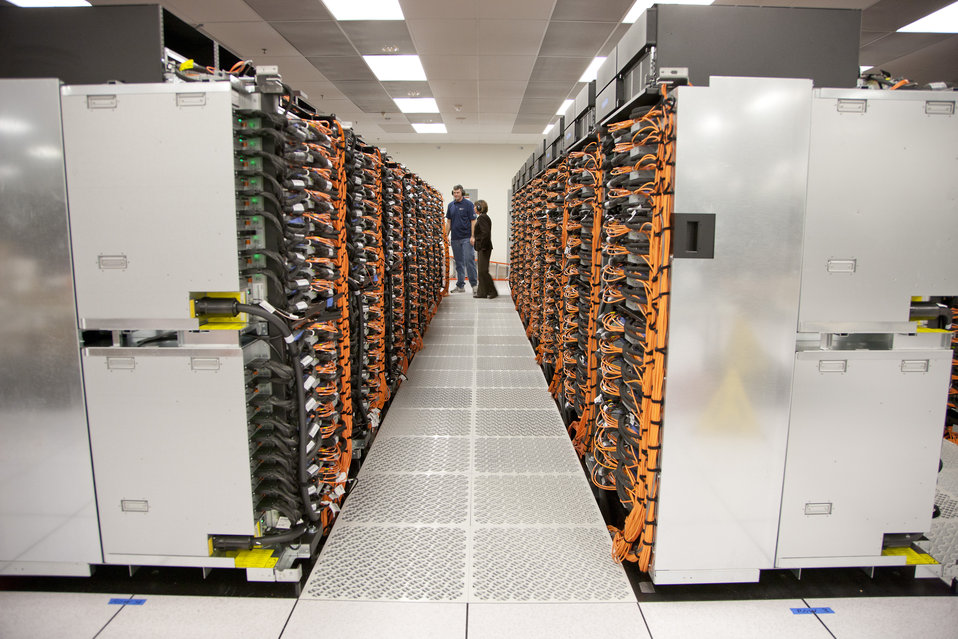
SEQUOIA EARNED THE NUMBER ONE RANKING ON THE INDUSTRY STANDARD TOP500 LIST OF THE WORLD'S FASTEST SUPERCOMPUTERS RELEASED ON JUNE 18, 2012.

Sequoia is dedicated to NNSA's Advanced Simulation and Computing program for stewardship of the nation's nuclear weapons stockpile, a joint effort from LLNL, Los Alamos and Sandia National laboratories. It is primary water cooled and consists of 96 racks; 98,304 compute nodes; 1.6 million cores; and 1.6 petabytes of memory. Sequoia was built for NNSA by IBM. It is scheduled for deployment in fall 2012.